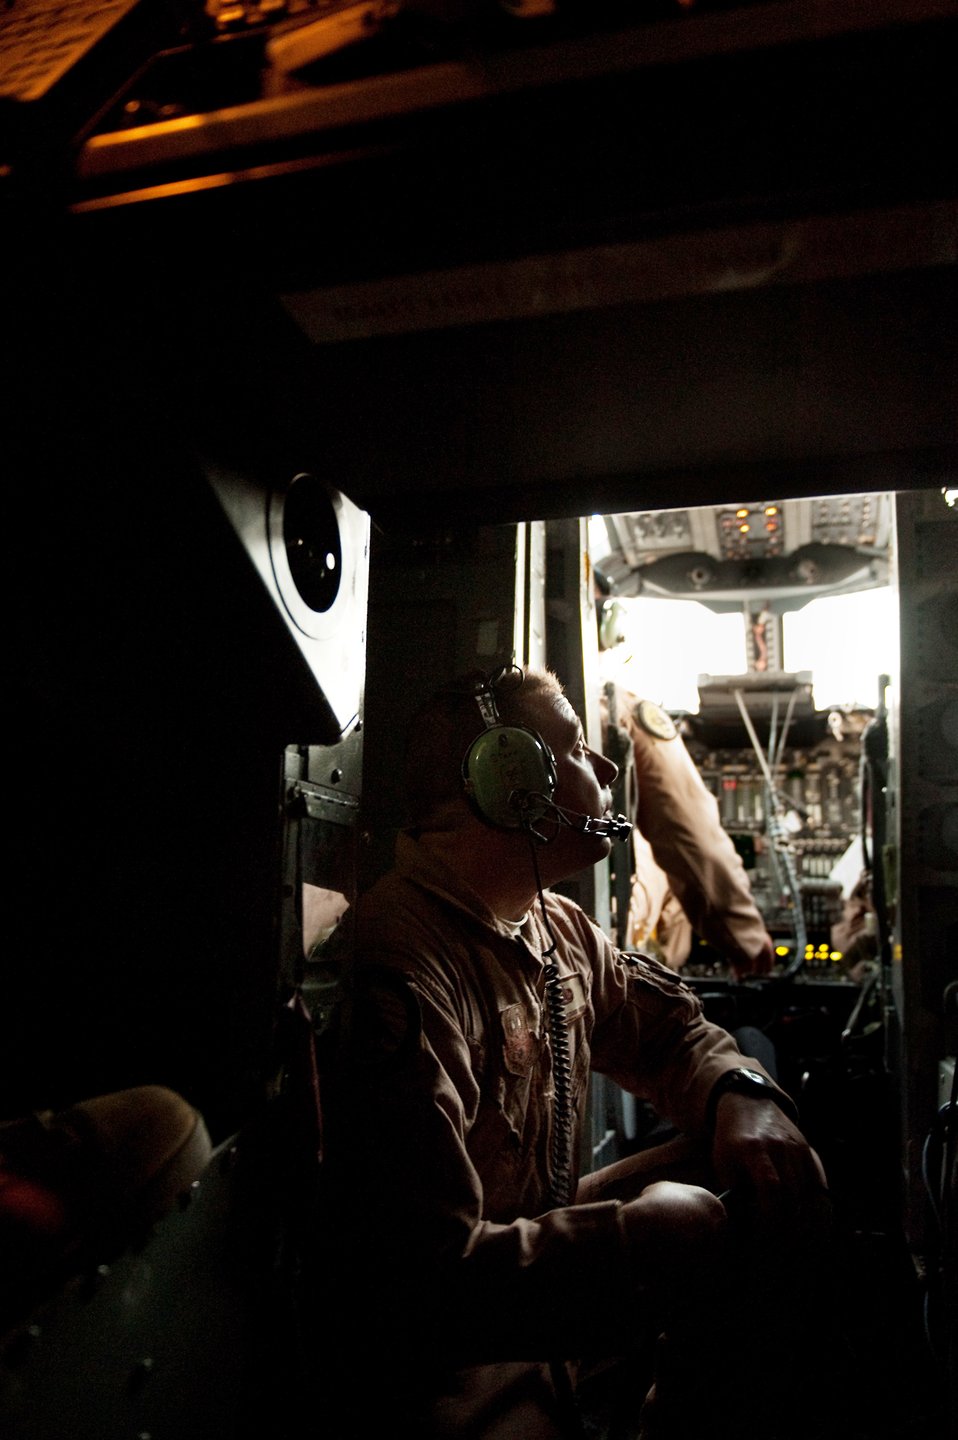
Checking out the B-1B for combat

Tech. Sgt. Richard Starr, 37th Expeditionary Bomb Squadron computer systems operator, performs preflight checks on the B-1B Lancer computer system, Nov. 11, 2009, at an air base in Southwest Asia. Sergeant Starr is deployed from Ellsworth Air Force Base, S.D.